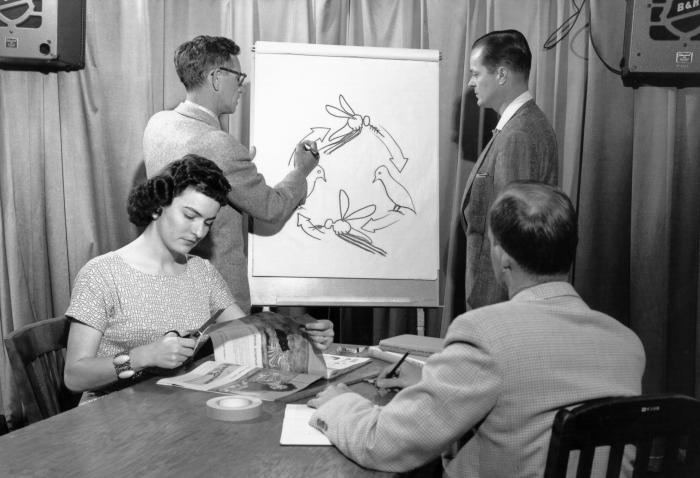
These CDC personnel were participating here in a training course in improvisation for training aids.